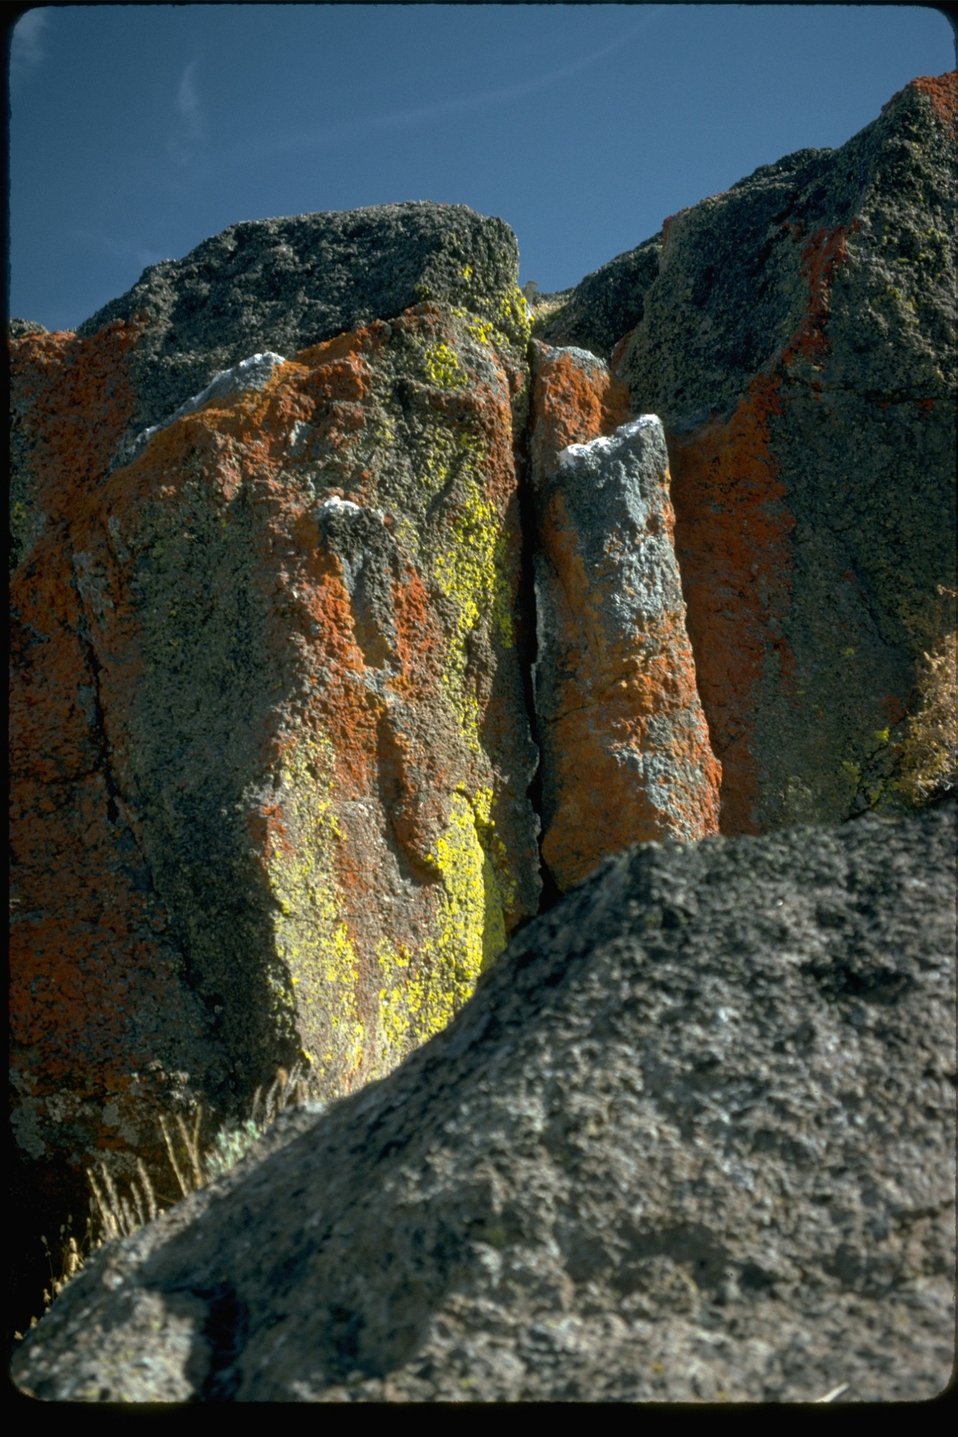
Lichen on a rock outcrop at Steens Mountain, Oregon.